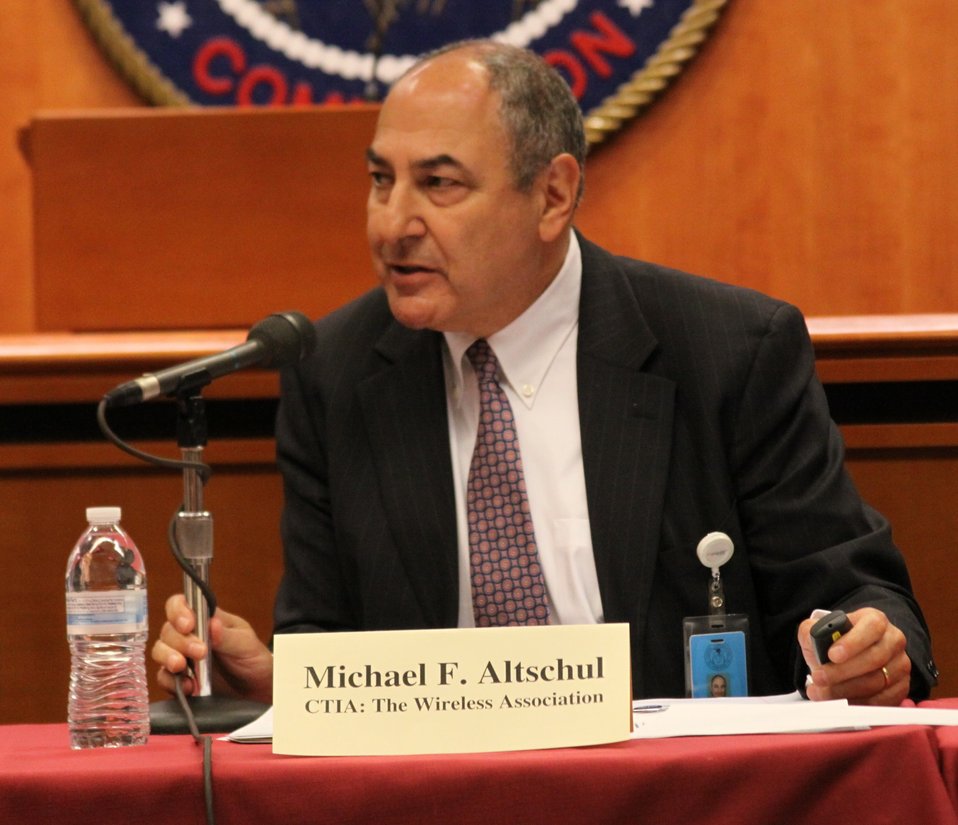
April 17, 2013 Bill Shock and Cramming Workshop